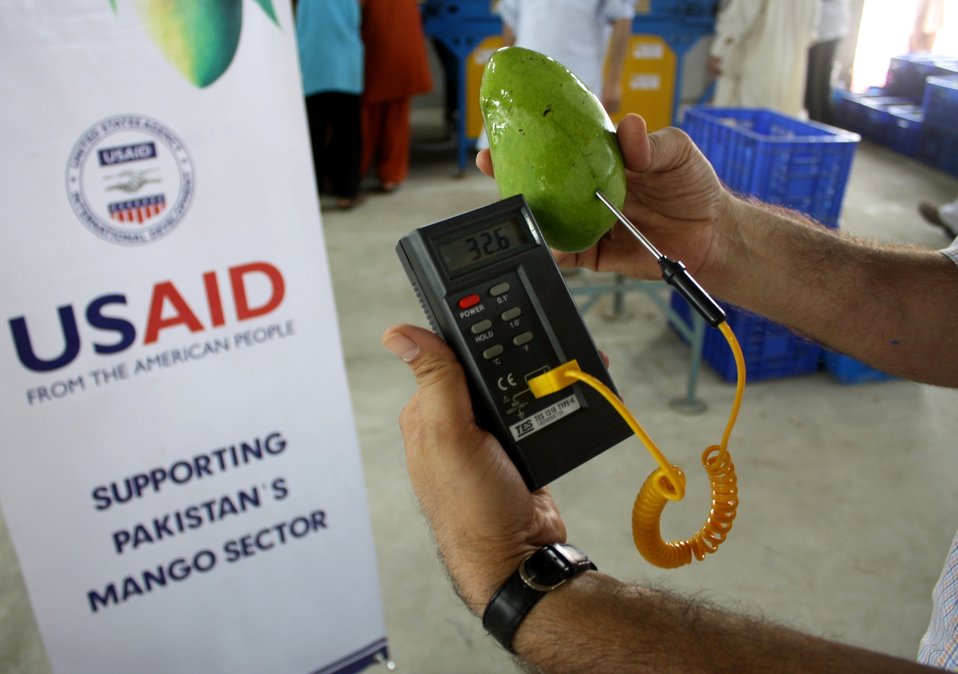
USAID helps Pakistan’s mangoes reach new export markets - 1

Hot water treatment for mangoes is part of the new processing line that is now available to Pakistan’s farmers through the efforts of the USAID Firms Project. As a result, the local mango growers can now adopt cost-effective post-harvest processing solutions that will enable them to export mangoes at competitive prices to high-end markets.